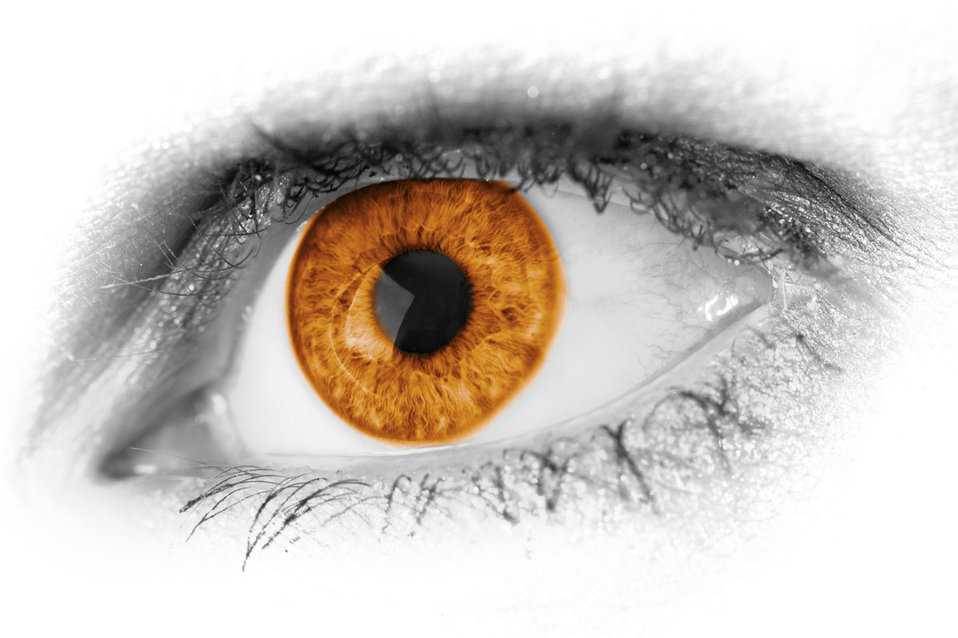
Brown eye detail

Macro photo in black and white with a brown eye.